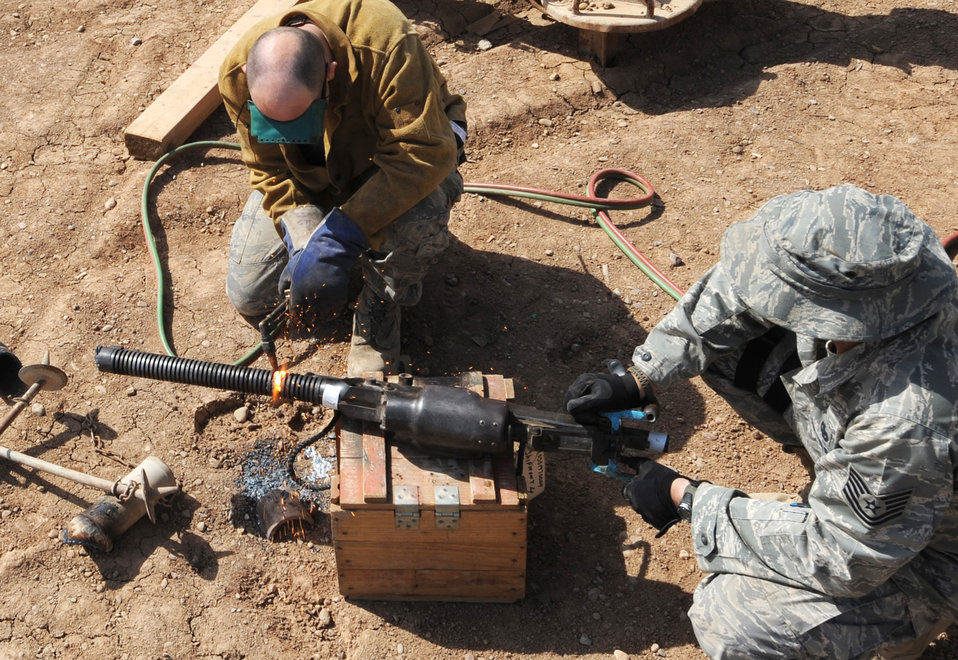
Security forces destroy Iraqi weapons for base security

Tech. Sgt. Gregg Fleming holds a weapon steady as Tech. Sgt. Roy Hurd uses an oxy-acetylene torch to cut it at Joint Base Balad, Iraq, March 18. Enemy weapons were turned in by units and are being destroyed so they cannot be used against coalition forces and Iraqis. Sergeant Hurd is a 332nd Expeditionary Civil Engineer Squadron structural journeyman. Sergeant Fleming is the 332nd Expeditionary Security Forces Squadron assistant NCO in charge of combat arms training, maintenance and armory.